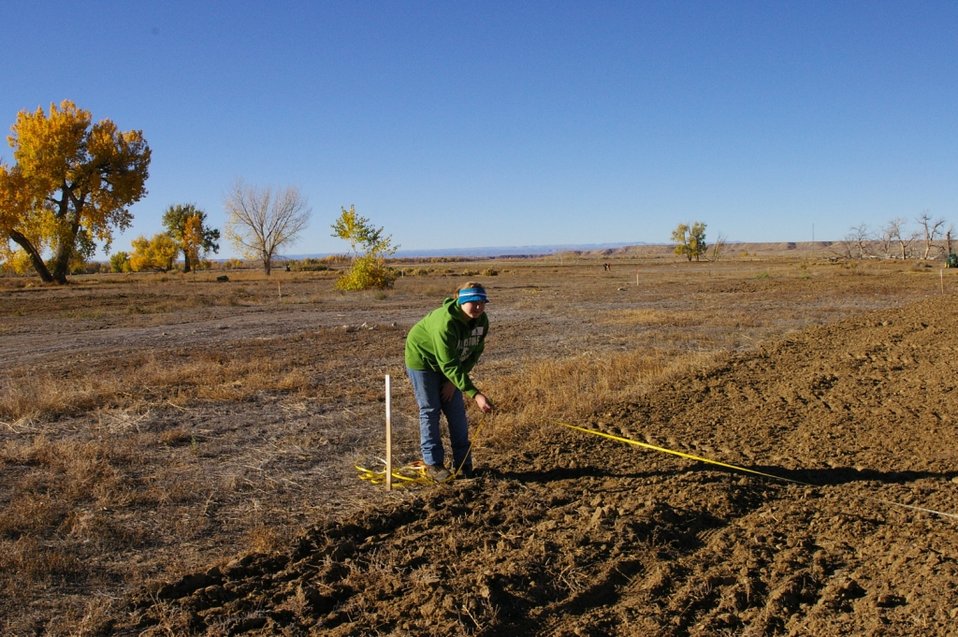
Volunteer

Hattan Mollnow a Vernal Middle School student is seen here measuring out a research plot. Hattan volunteered for a day to learn what it was like to be a biologist. This is part of a grassland research project at Ouray National Wildlife Refuge.